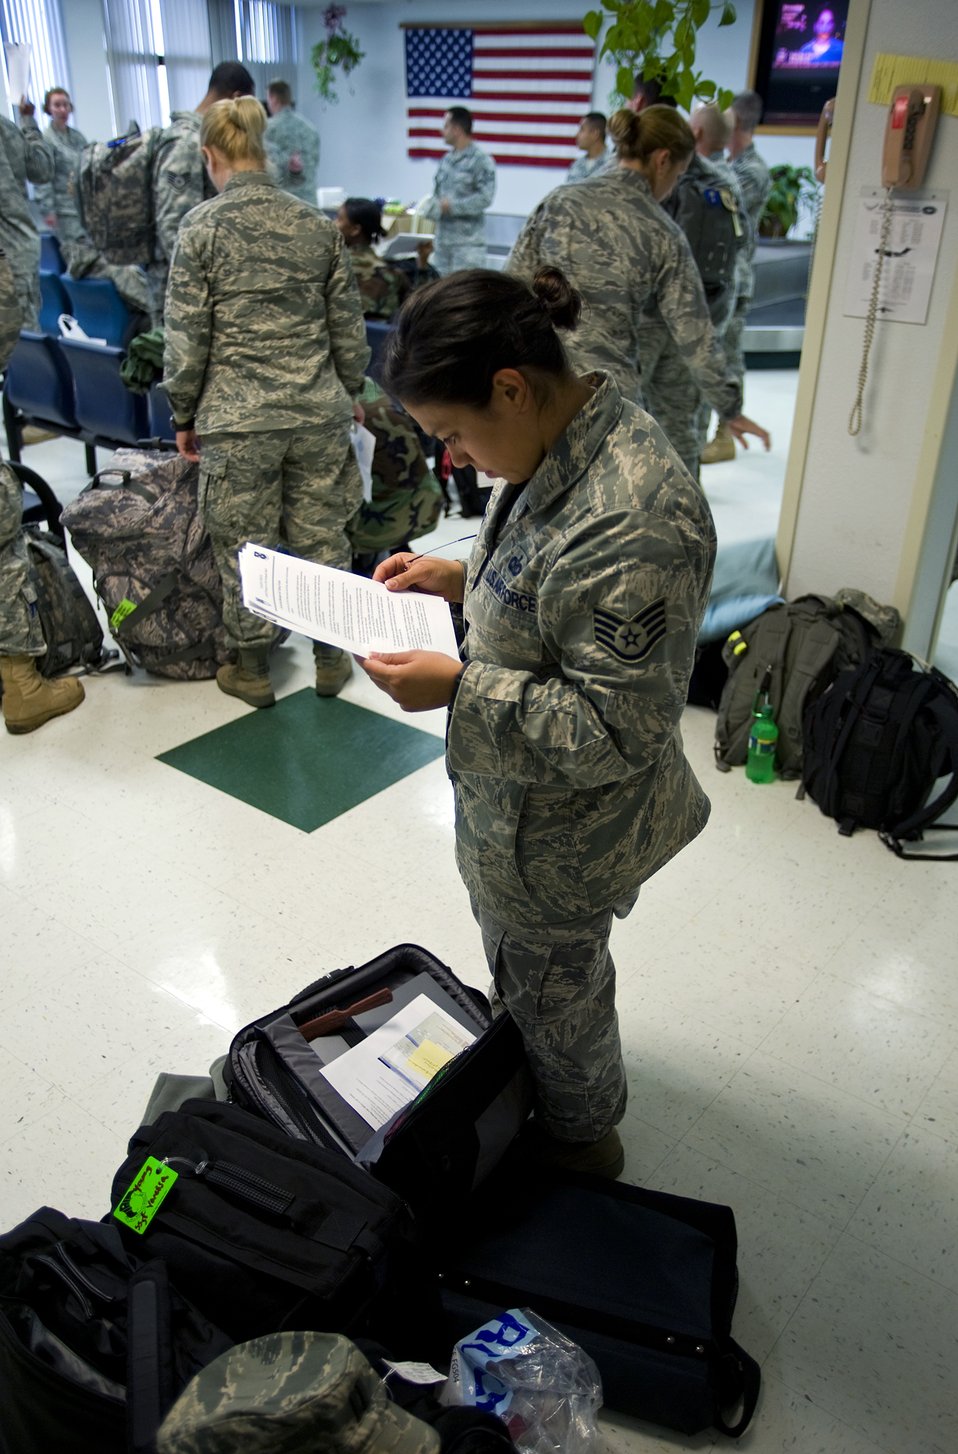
Air Force medics deploy to support Chilean medical efforts

Staff Sgt. Vanessa Young reads over her processing paperwork in preparation of her deployment to Chile March 8, 2010, at Lackland Air Force Base, Texas. Sergeant Young, a public affairs specialist, is deploying in support of an Air Force Expeditionary Medical Support team composed of more than 80 Airmen who deployed to Chile March 8 to aid local medics in response to victims of the Feb. 27, 2010, 8.8 magnitude earthquake there. Sergeant Young is a member of the Defense Media Activity-San Antonio,